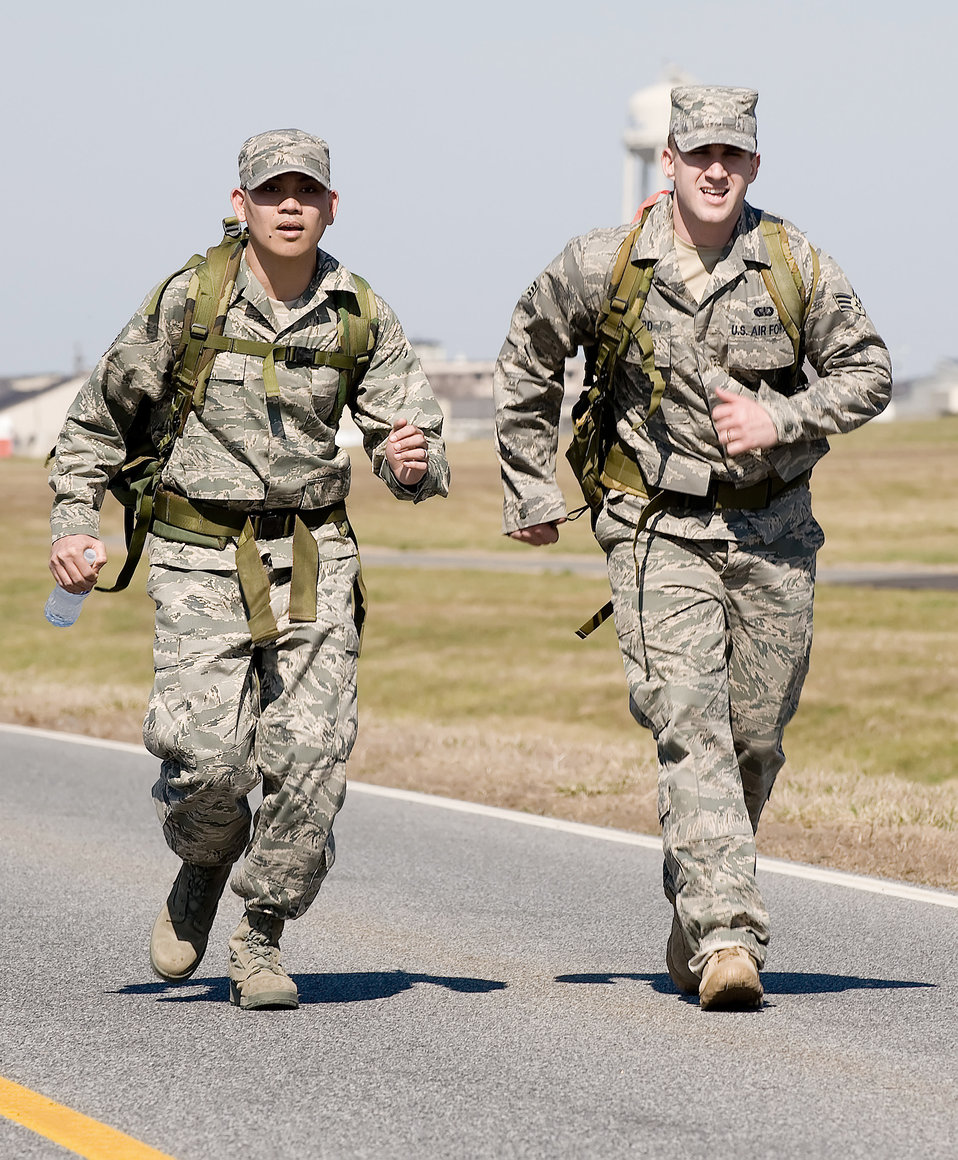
Airmen participate in ruck march

Staff Sgt. Herbert Dungca (left) and Senior Airman Jonathan Howard pick up the pace during the 436th Security Forces Squadron's 11th Annual Ruck March held March 20, 2010, at Dover Air Force Base, Del. The annual 6.2-mile march is a fundraiser to honor the veterans of the Korean War who fought in the Battle of the Chosin Reservoir. Sergeant Dungca and Airman Howard are Air Force Mortuary Affairs Operations Center dignified transfer team members.